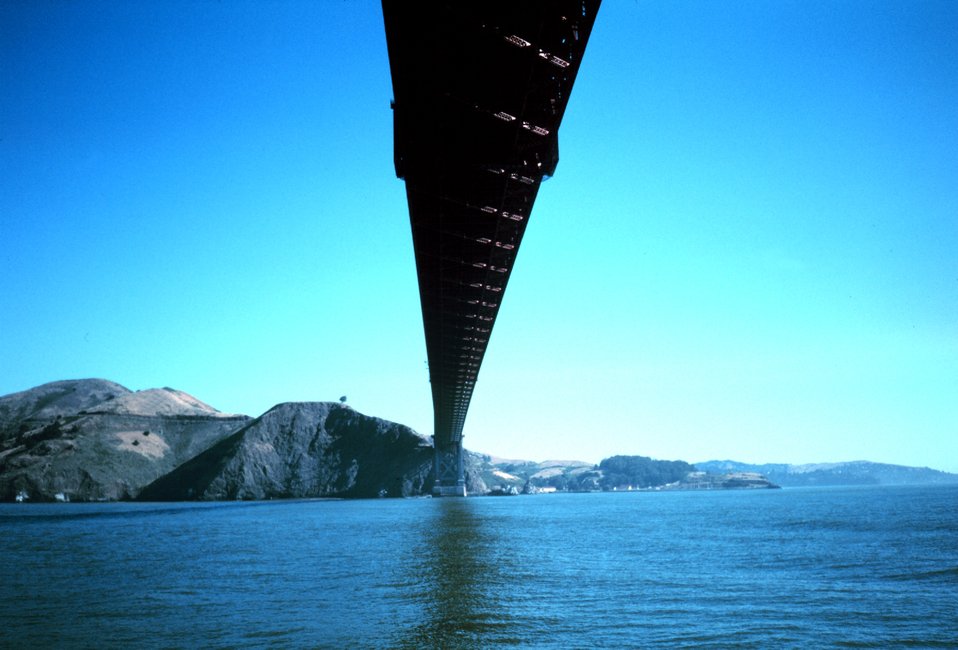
The Golden Gate Bridge as seen from the bridge's south pier looking north.